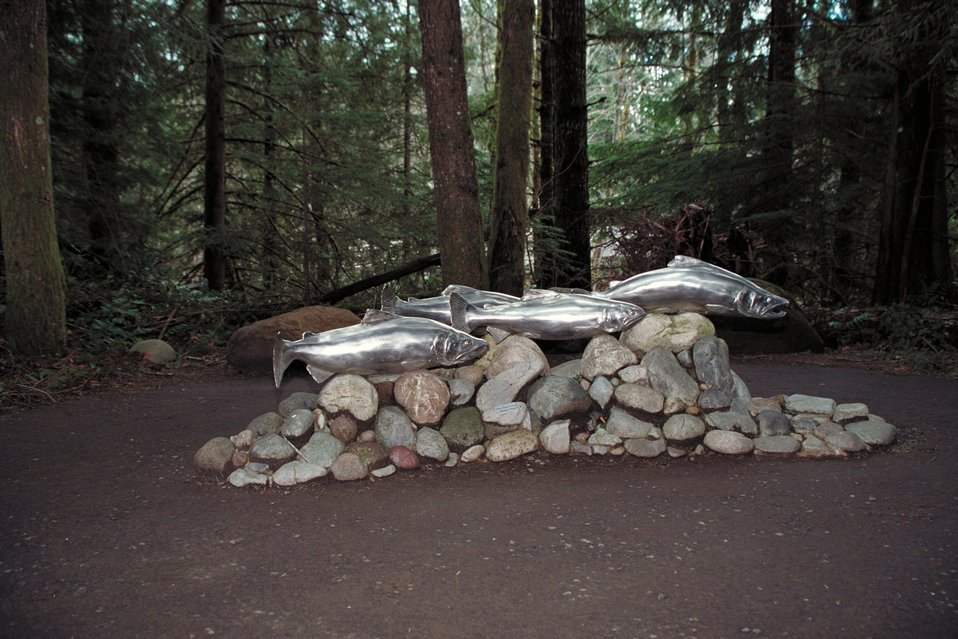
Cascade Stream Watch is an environmental education program conducted at BLM's Wildwood Recreation site.